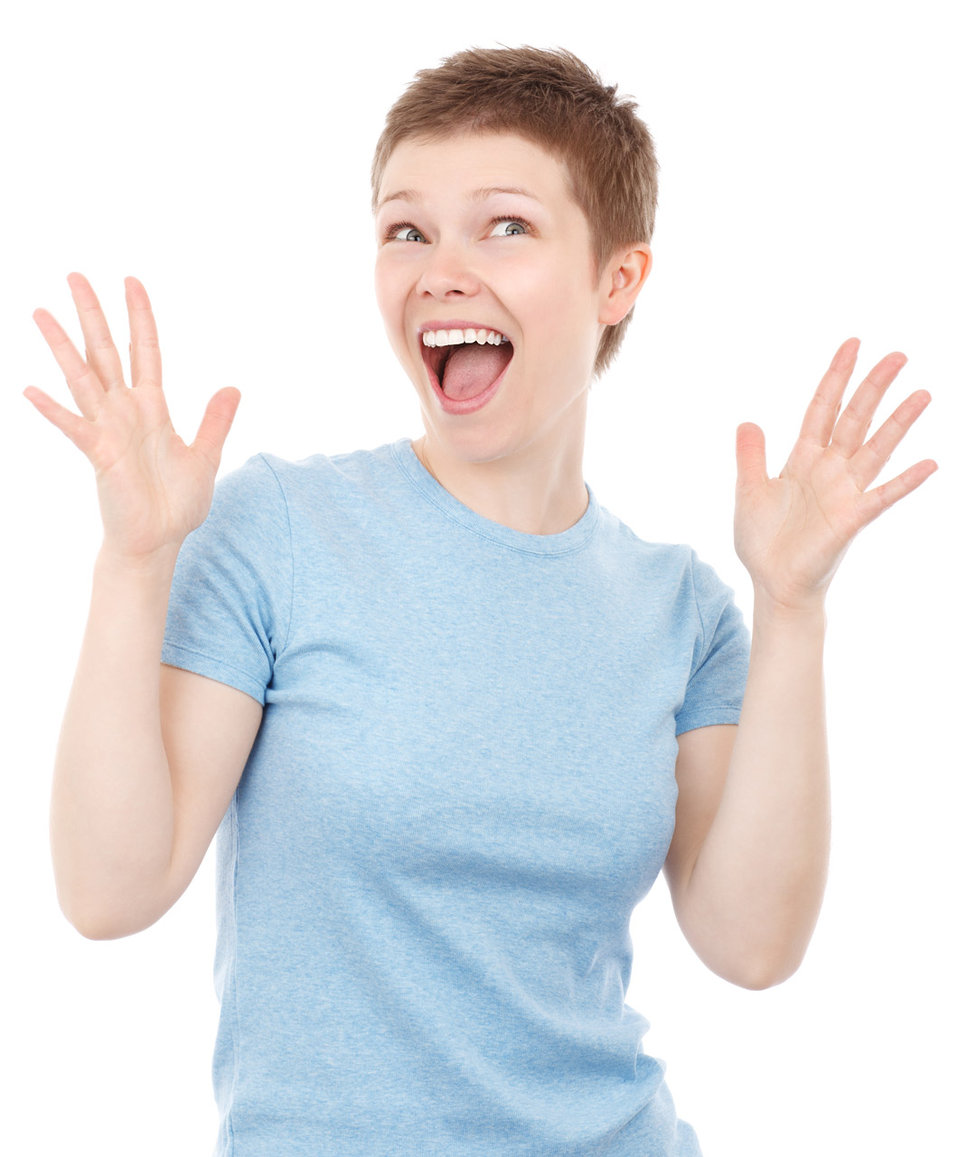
Happy woman isolated

Extremely happy young woman isolated on white background - jana svojsova.